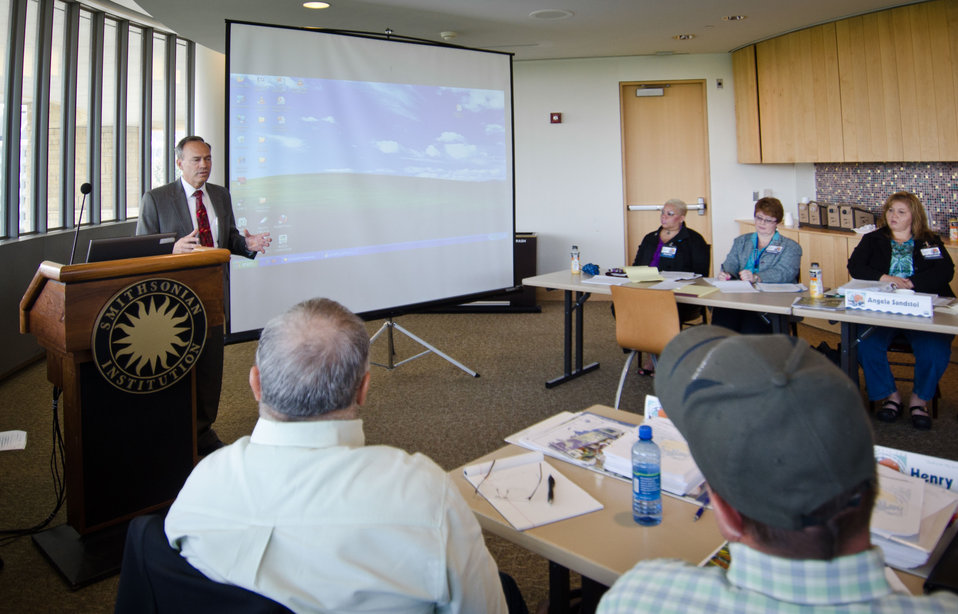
U.S. Department of Agriculture (USDA) Grain Inspection, Packers and Stockyards Administration (GIPSA) Deputy Administrator Alan Christian speaks during the first business meeting of USDA’s Council for Native American Farming and Ranching (CNAFR) held at the National Museum of the American Indian in Washington, D.C. on Tuesday, Aug. 14, 2012. CNAFR was created to advise the Secretary on ways to eliminate barriers to participation for Native American Farmers and Ranchers in USDA programs. The Council was established as part of the Keepseagle settlement, and is conducted under the oversight of USDA's Office of Tribal Relations under the Office of the Secretary of Agriculture.